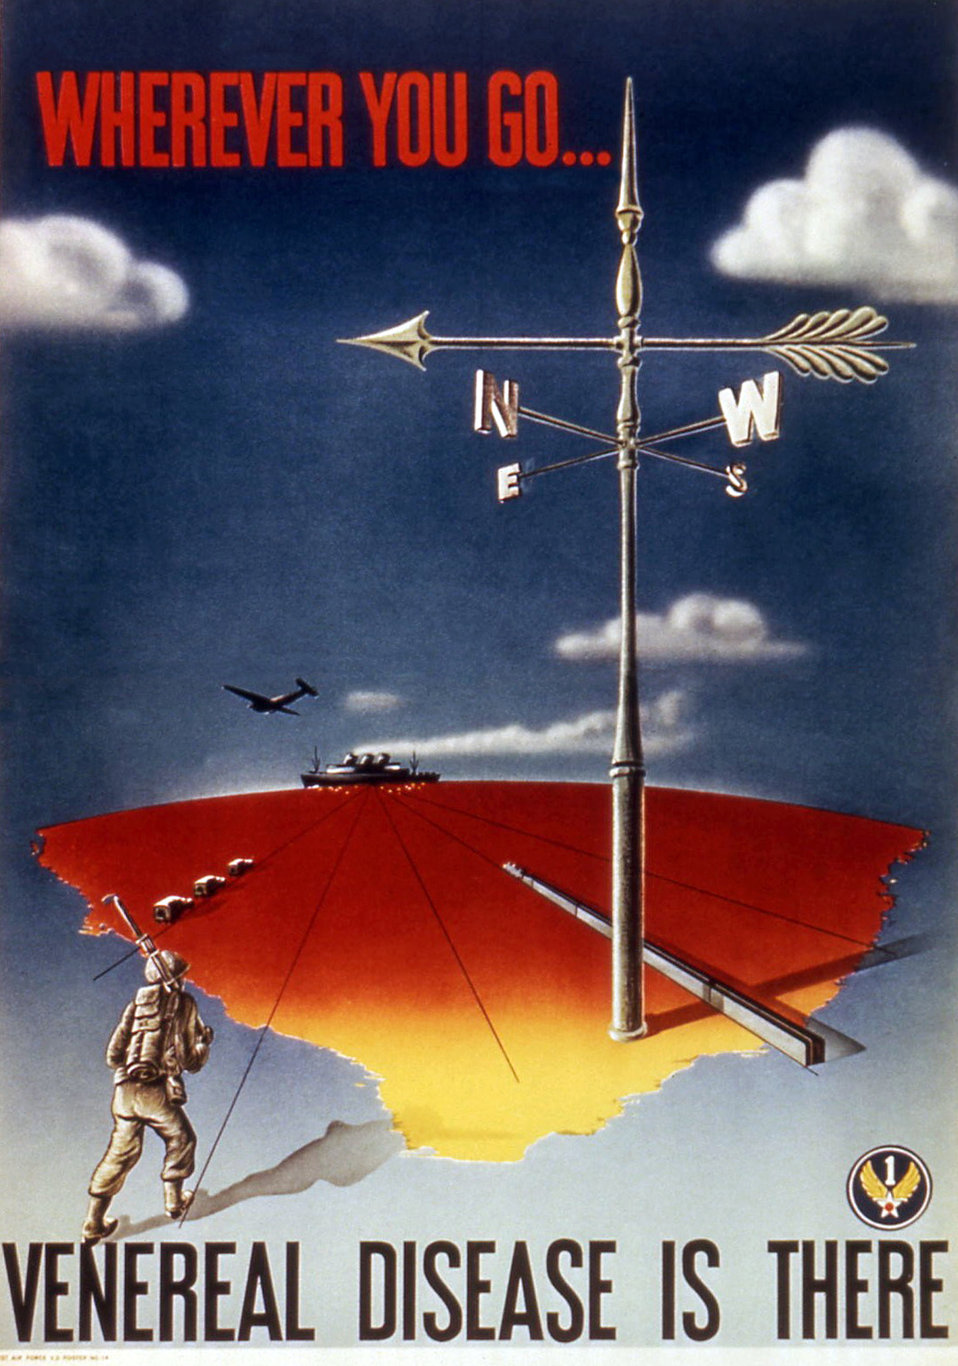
World War II poster

This United States Air Force poster was used to remind servicemen fighting abroad during World War II that venereal disease is not just a local concern, but that VD can be found 'wherever you go...'